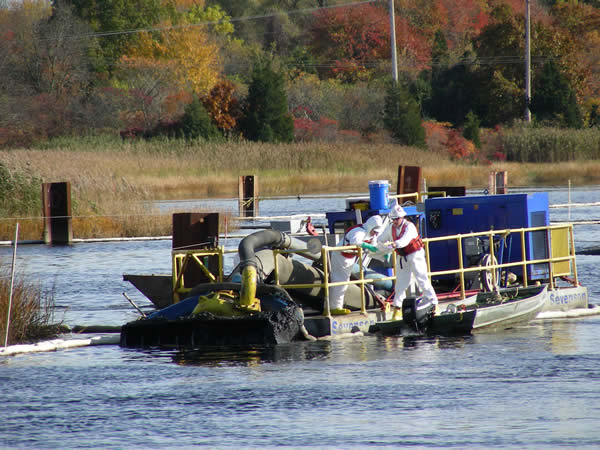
November 2009, Field team coordinates the days dredge plan